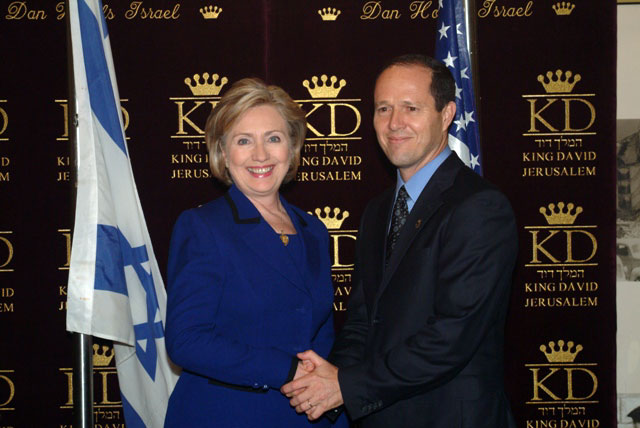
Secretary Clinton meets Jerusalem Mayor Nir Barkat and the King David hotel in Jerusalem March 3, 2009.